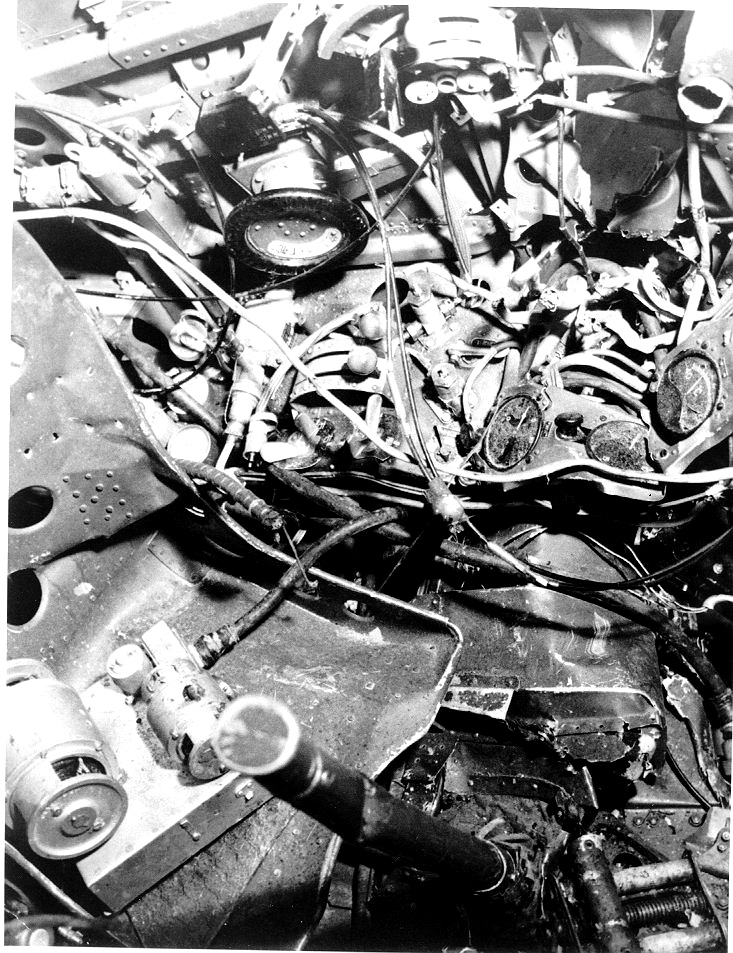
Japanese Zero's cockpit

Wreckage from a Japanese Zero found on the island of Oahu, Hawaii, following the Dec. 7 attacks.